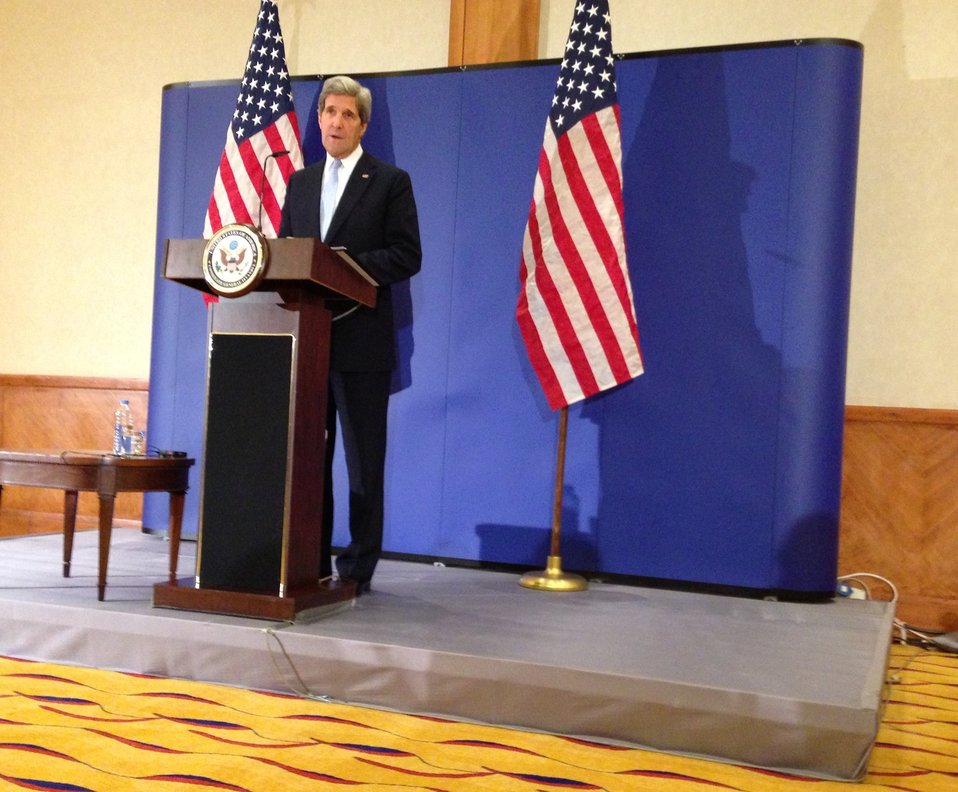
Secretary Kerry Delivers Remarks to the Press

U.S. Secretary of State John Kerry delivers remarks to the press in Istanbul, Turkey on April 21, 2013.